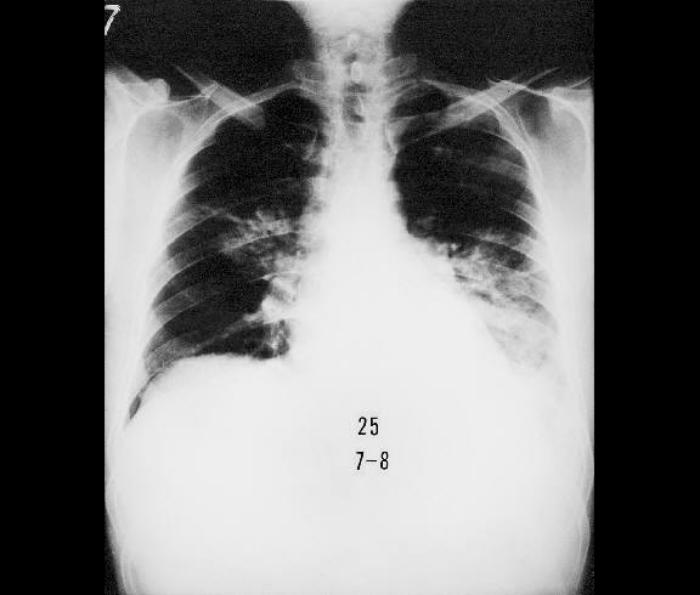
This anteroposterior (AP) chest radiograph was from a patient diagnosed with a case of Legionnaires' disease.